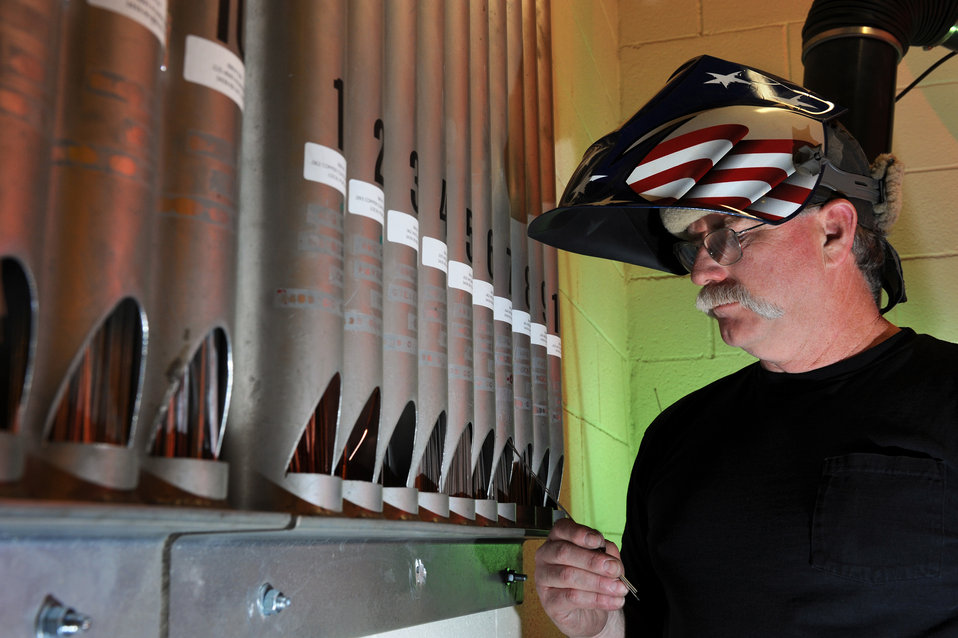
Hot spot at Nellis

Randy Cherland selects the proper welding beam to match the metal specifications for the welding job April 16 at Nellis Air Force Base, Nev. He is a metals technician with the 57th Components Maintenance Squadron here.